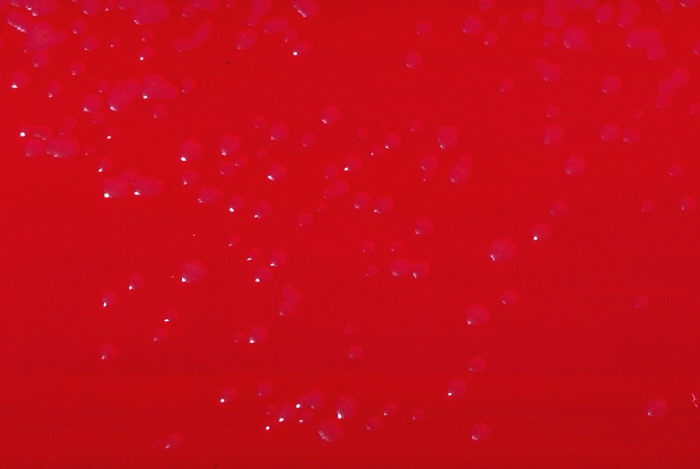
Blood agar plate culture of Flavobacterium odoratum.